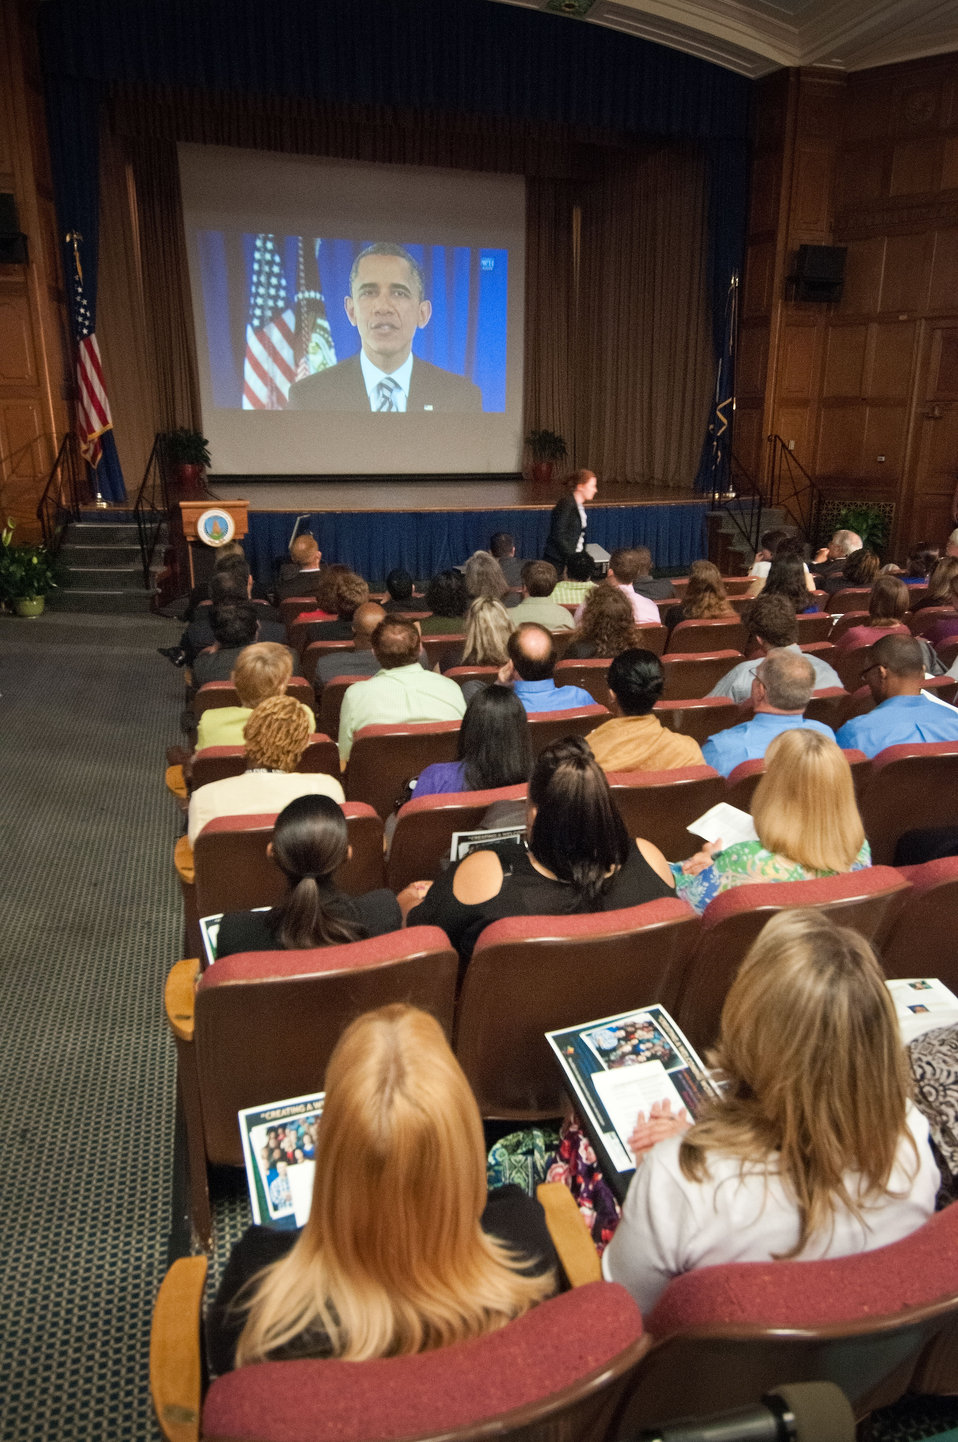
United States Department of Agriculture employees watch a video message of President Barack Obama at the LGBT Pride Observance, “The Sum of Us: Lesbian, Gay, Bisexual and Transgender Pioneers” at the United States Department of Agriculture in Washington, D.C., Thursday, June 7, 2012.